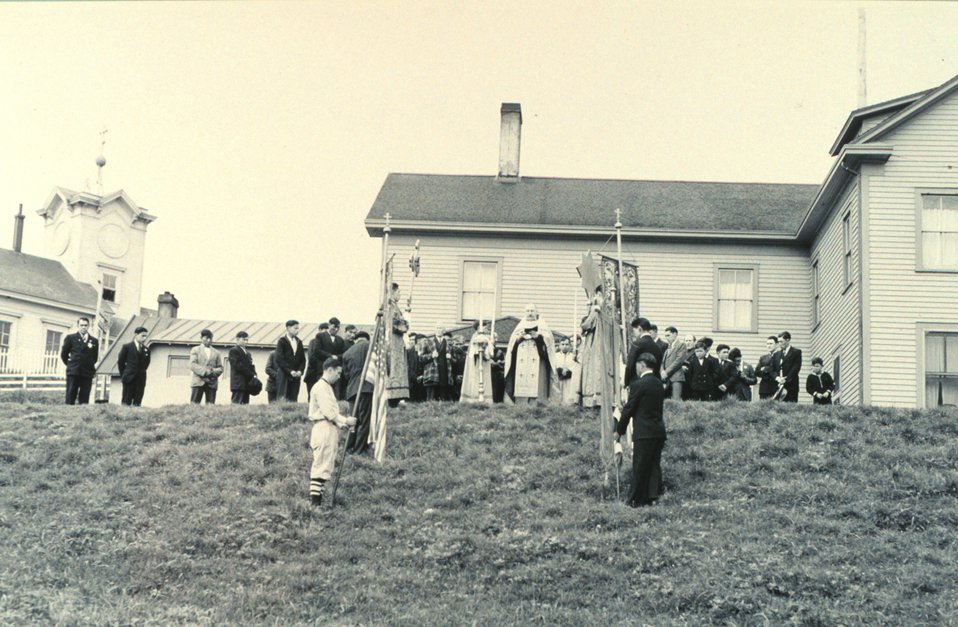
Religious and patriotic ceremony commemorating the 4th of July. F&WS 10,074.